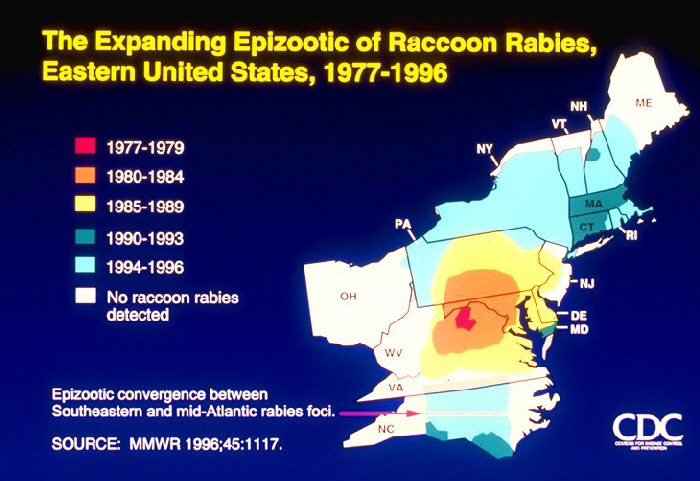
The Expanding Epizootic of Raccoon Rabies, Eastern United States, 1977-1996 (map)